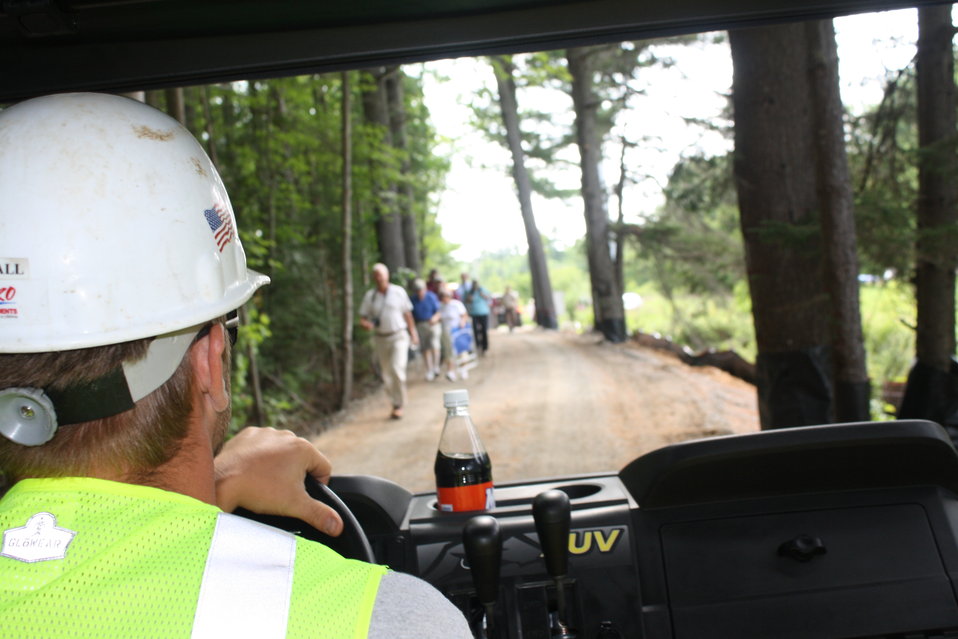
Veazie Dam Removal

A shot of people walking down to the press conference and breaching event.